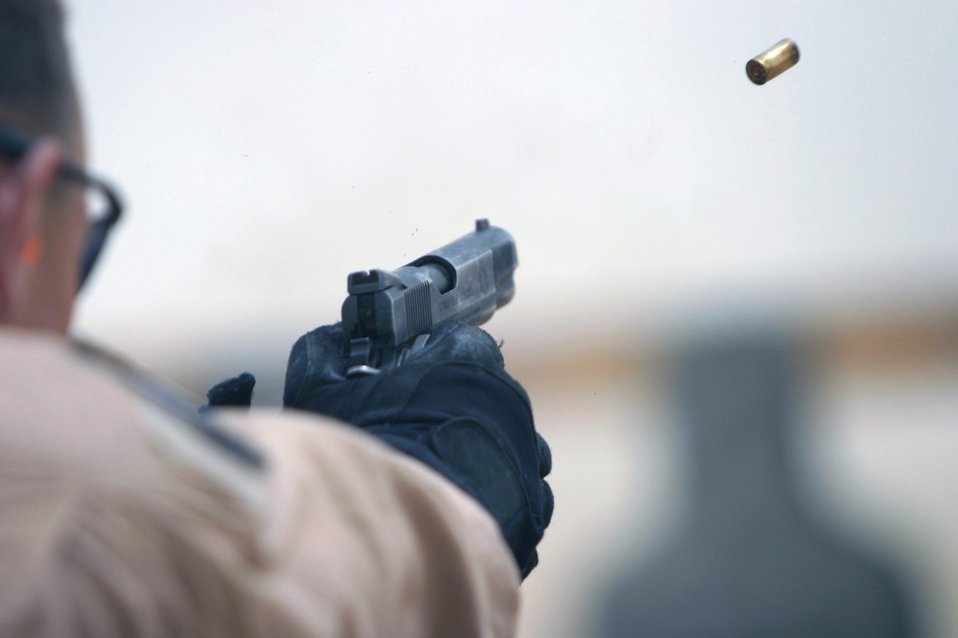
A very good look on the cartridge after shooting a gun. I took this photo two years ago עברית: מבט טוב מאוד על התרמיל שנפלט לאחר ירי באקדח תמונה שצילמתי לפני שנתיים